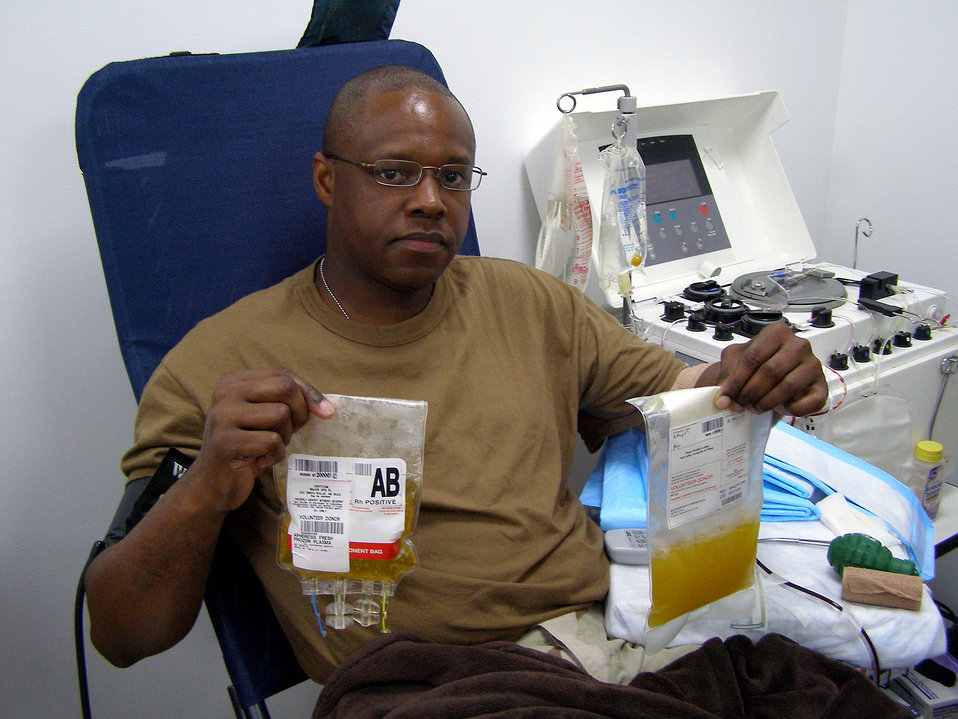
Balad collects first universal plasma donation

Tech. Sgt. Darrin Sewer sits in the donor's chair at the Air Force Theater Hospital Apheresis Center at Balad Air Base, Iraq, Aug. 5 after donating the first plasma in the area of responsibility. Sergeant Sewer has type AB plasma, the universal plasma type. The plasma will be used to supplement current supplies that are sent from the states. Sergeant Sewer is the NCO in charge of the 332nd Expeditionary Communications Squadron help desk.